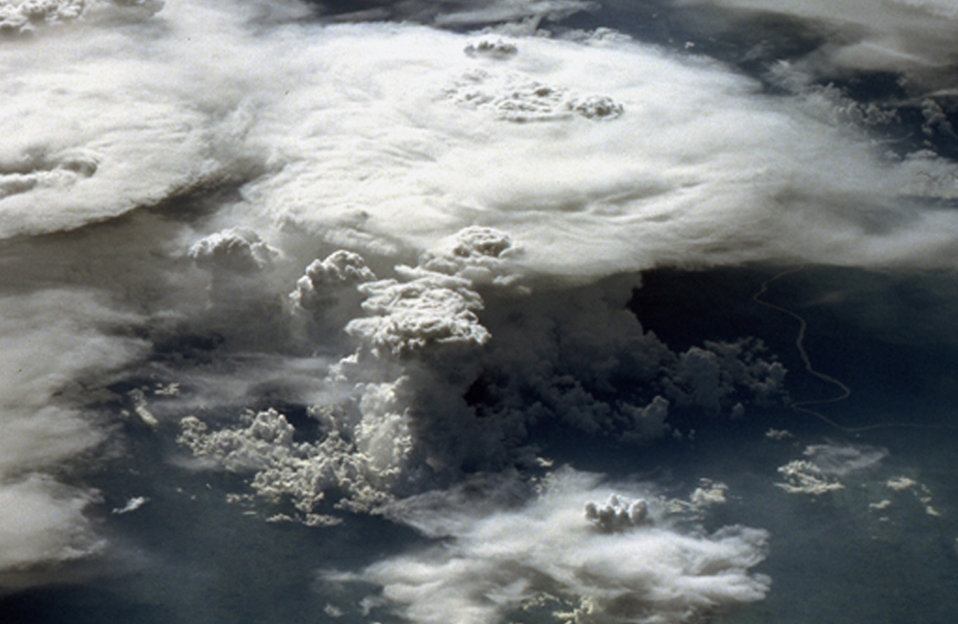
NASA research to help aircraft aviod ocean storms, turbulence

NASA officials here are funding the development of a prototype system to provide aircraft with updates about severe storms and turbulence as they fly across remote ocean regions.